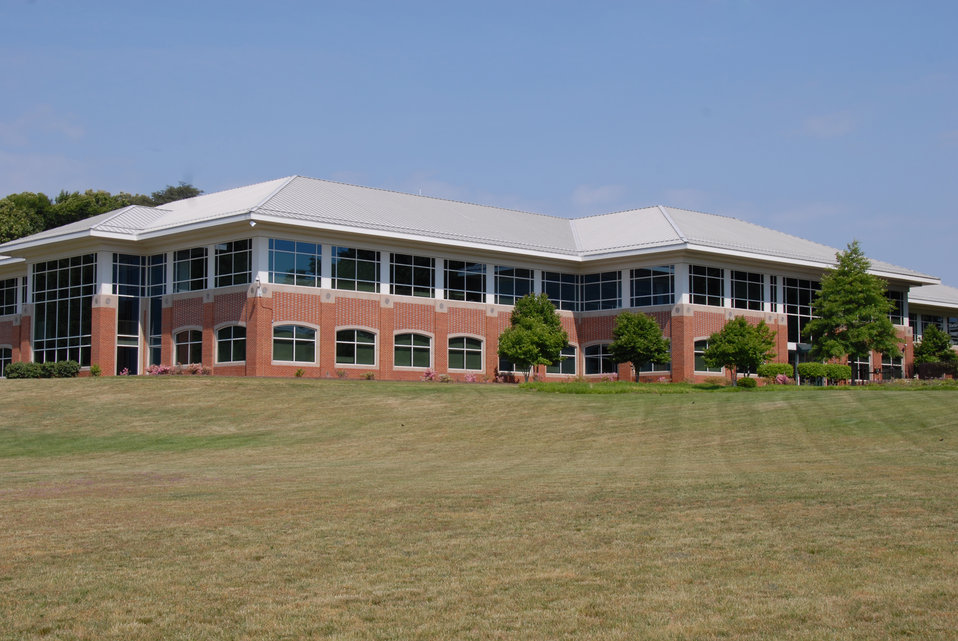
U.S. Department of Agriculture's (USDA) Food Safety and Inspection Service (FSIS) annually hosts a food safety camp that provides children with hands-on instruction about the dangers of foodborne illness and how to prevent it. This Food Safety camp was held at the USDA Beltsville, Maryland facility on May 23, 2007.